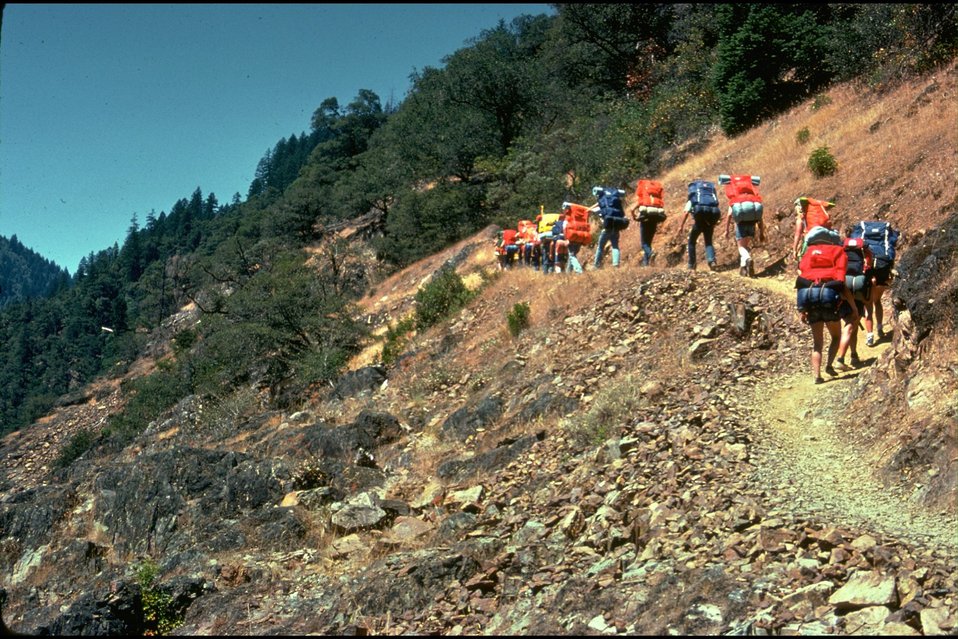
Rogue River Trail, hikers.